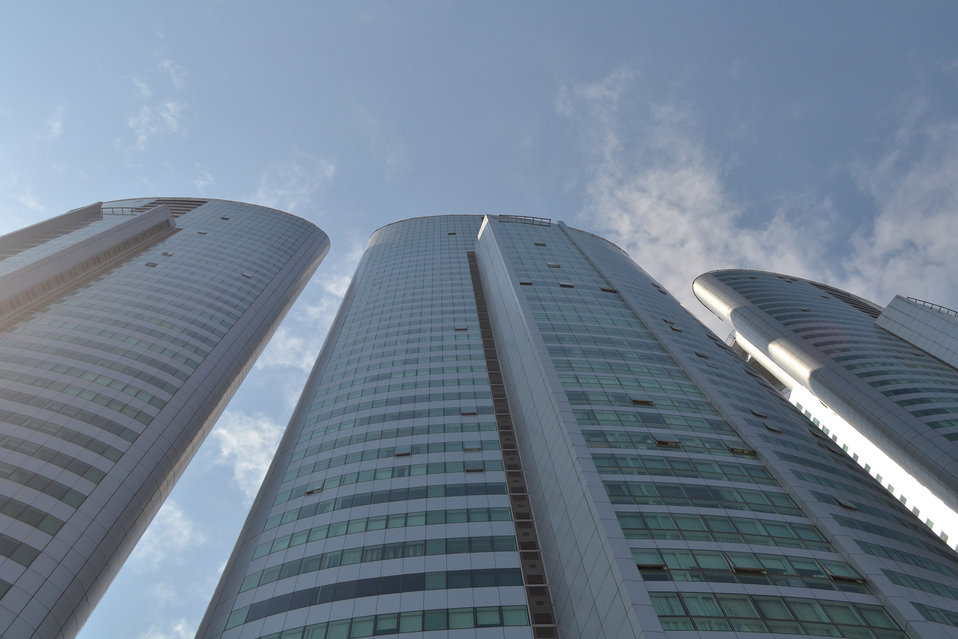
Buildings

Modern buildings.